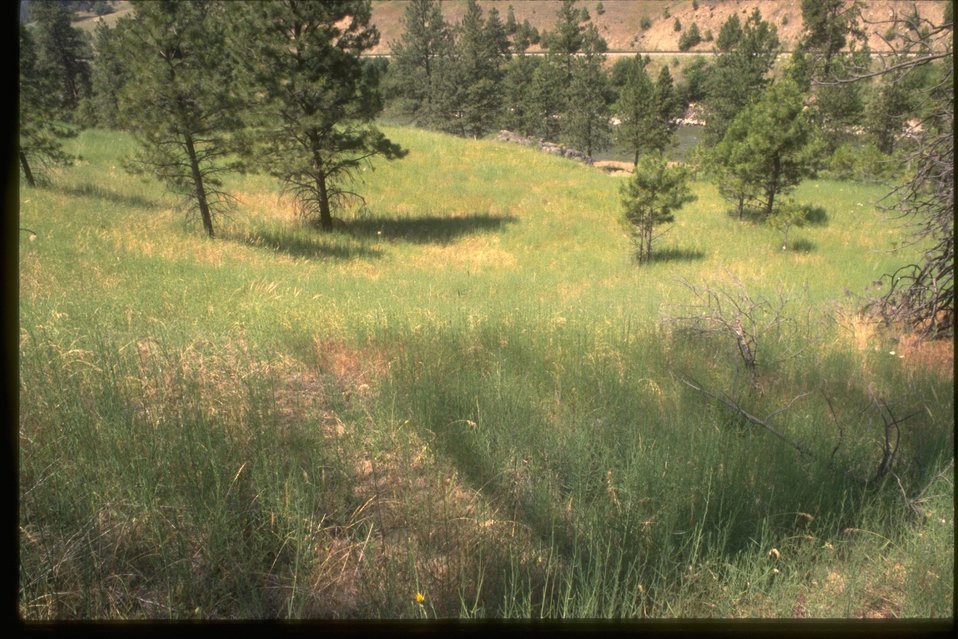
Rush skeleton weed (green) after a fire on BLM land.